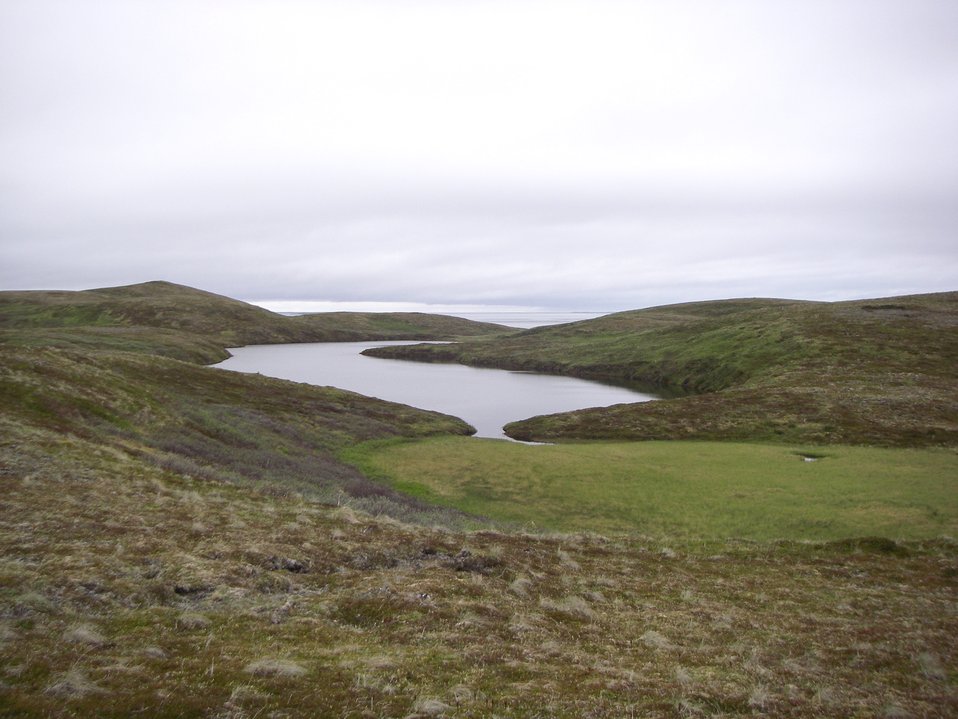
Izembek Wilderness

Wilderness north of Kinzarof Lagoon, Izembek National Wildlife Refuge
Photo by Kristine Sowl,
USFWS, Public Domain